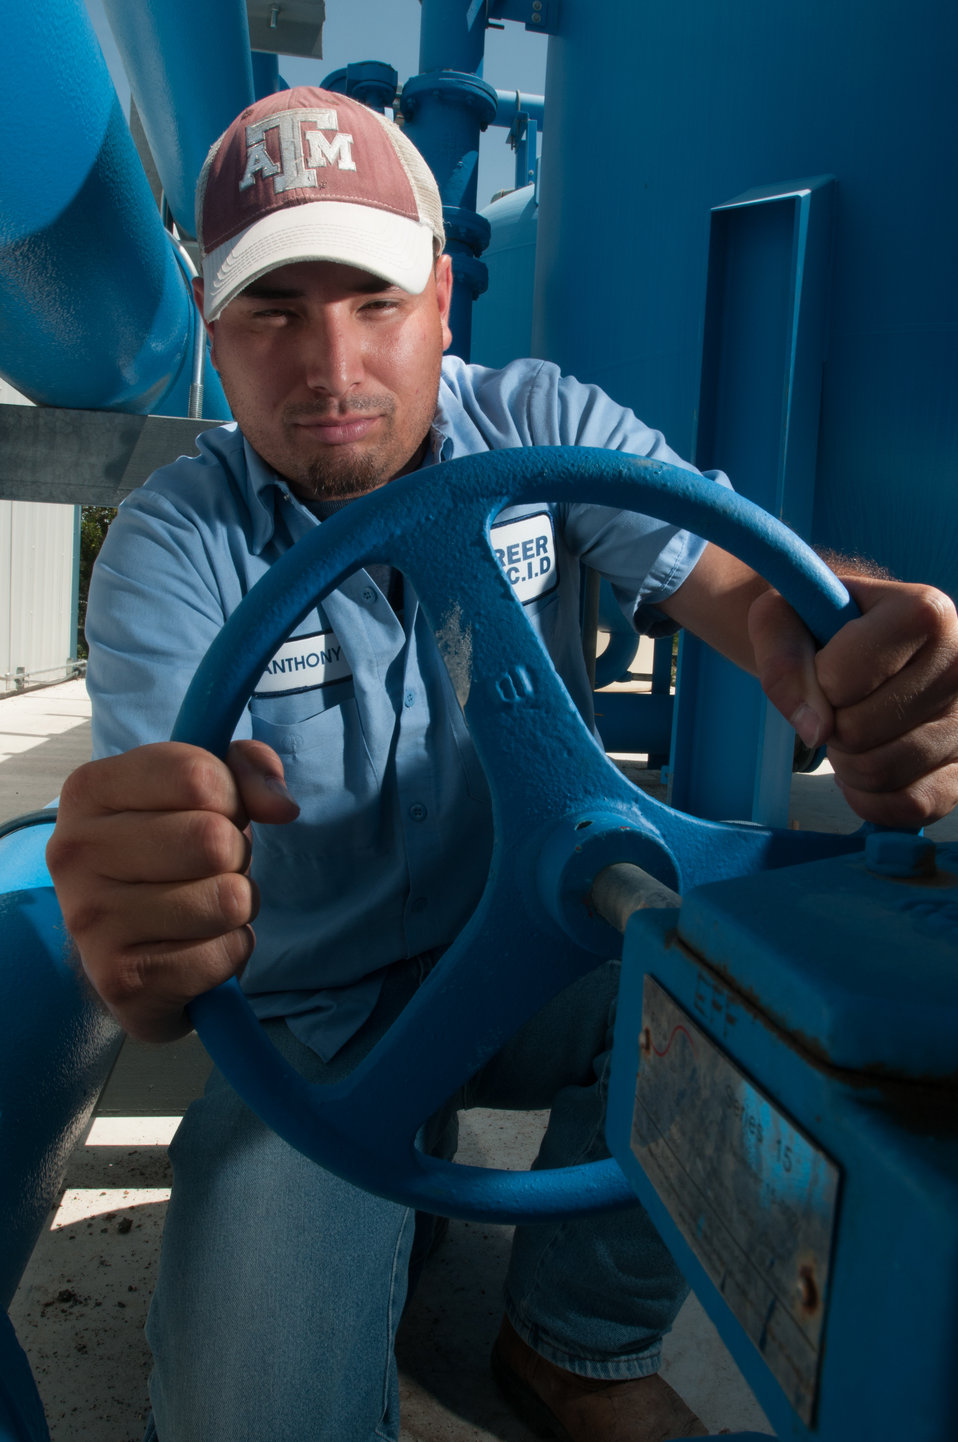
Anthony Arredondo operates a series of valves to route water to one of three arsenic removal absorber vessels, right, with media that attracts arsenic from water that is pumped through it. Freer Water Control and Improvement District benefits from the financial assistance of the U.S. Department of Agriculture (USDA) Rural Development (RD) to complete a two-phase approach to meeting the city’s water supply and safety needs, on Tuesday, June 18, 2013.

Freer Water Control and Improvement District (FWCID) benefits from the financial assistance of the U.S. Department of Agriculture (USDA) Rural Development (RD) to complete a two-phase approach to meeting the city’s water supply and safety needs, on Tuesday, June 18, 2013. Although, the naturally occurring arsenic levels have remained constant for more than a century, the Environmental Protection Agency (EPA) safe level standards have established lower levels of arsenic to be safe for human consumption. To meet those levels FWCID approached USDA and was awarded a $986,000 loan for Phase I, to install two new water wells, each rated at 167 gallons per minute (creating a total of eight wells); 13,600 feet of well collection lines; and 15,000 linear feet of well control line to remotely control the well pumps and the 1,000,000 gallon holding tank at the well facility, which supplies water to the new Arsenic Removal System (Phase II). Previously, water was manually controlled by personnel who knew when and how long to manually opened and closed water valves or started well pumps to ensure holding tank levels were within operating levels during peek and slack times of the day. Phase II was a combination of a $1,832,000 loan and a $1,258,750 grant, which provided for the customized arsenic removal system, seen in these photos. The system includes a new 3,530 sp. ft. facility, on a .76-acre site, and houses the operations room, computer and power system, laboratory room, and pump systems. The entire operation can be monitored through a desktop computer interface system. The computer-controlled system ensures raw water is fed to the pump system, which works in sequence to maintain a constant pressure to the system, when needed to pump water through (blue) arsenic removal absorber vessels, and then to ground storage tanks that feeds the residential and commercial needs of the city. Samples of water are periodically tested; and so far the arsenic levels have been below 1 part per billion (PPB), well under the 10 PPB limit.